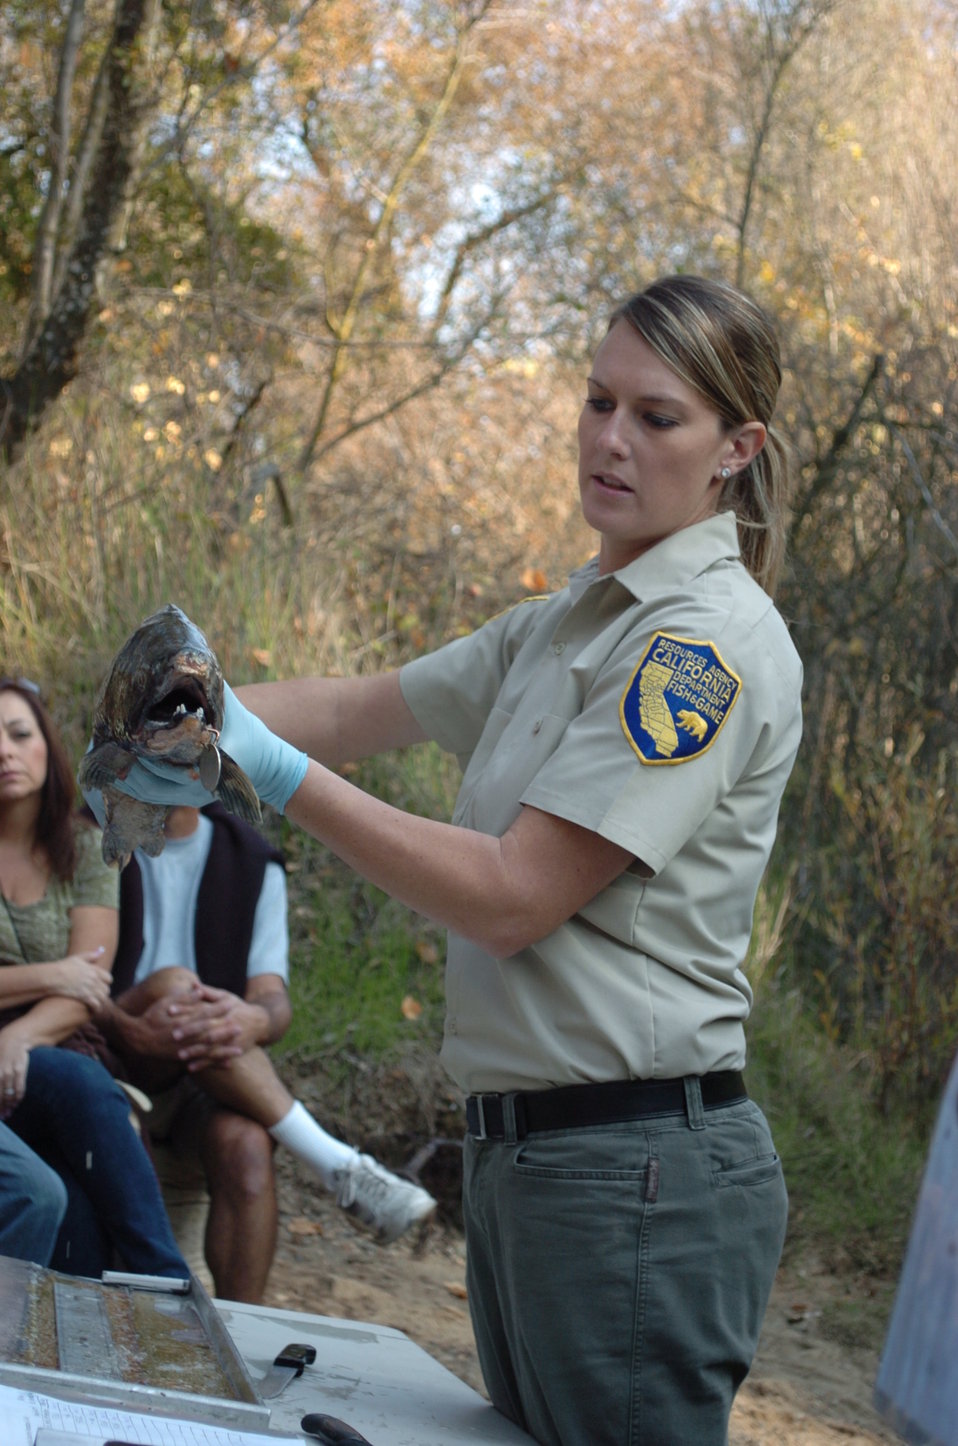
KNIGHT’S FERRY, Calif. (Nov. 16, 2010) – A California Department of Fish and Game biologist displays a Chinook salmon to attendees at the second annual Stanislaus River Salmon Festival hosted by the U.S. Army Corps of Engineers Sacramento District’s Stanislaus River Parks here Nov. 14.
Chinook salmon and steelhead trout share the Stanislaus River with 25 other game fish. According to J.D. Wikert, habitat restoration coordinator for the U.S. Fish and Wildlife Service and one of the festival coordinators, more than 11,000 Chinook salmon returned to their spawning ground on the river during this year’s fall run. More than 3,000 people attended the event, aimed educating young people on the protection of the local fish and its habitat.